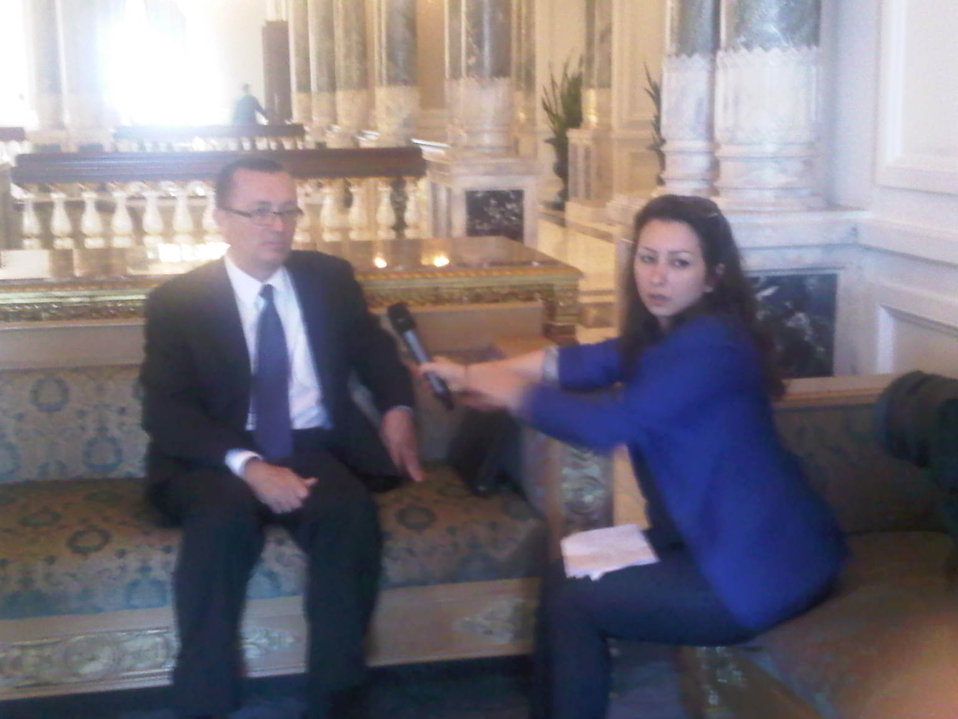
Assistant Secretary Feltman Appears on Libya TV

Assistant Secretary for Near Eastern Affairs Jeffrey Feltman is interviewed for Libya TV in Istanbul, Turkey, on July 15, 2011.